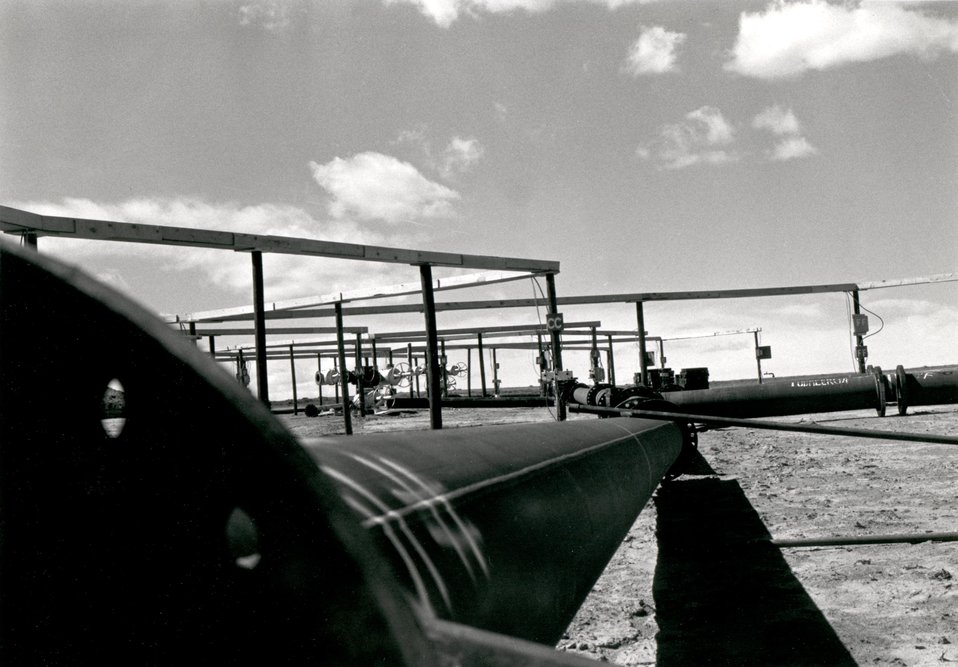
A view down the 36-inch surface gas production piping showing a wellhead in the background for use in DOE's Hanna IV underground coal gasification program in Wyoming. Circa 1978.